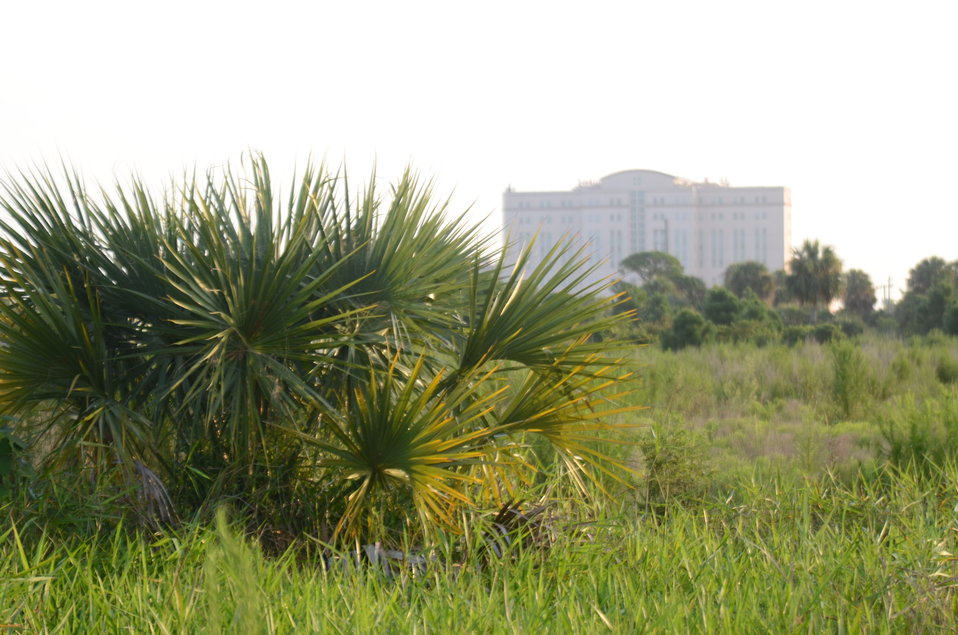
Agriculture Secretary Tom Vilsack today announced $100 million in financial assistance to acquire permanent easements from eligible landowners in four counties and assist with wetland restoration on nearly 24,000 acres of agricultural land in the Northern Everglades Watershed, FL, on Thursday, August 8, 2011.